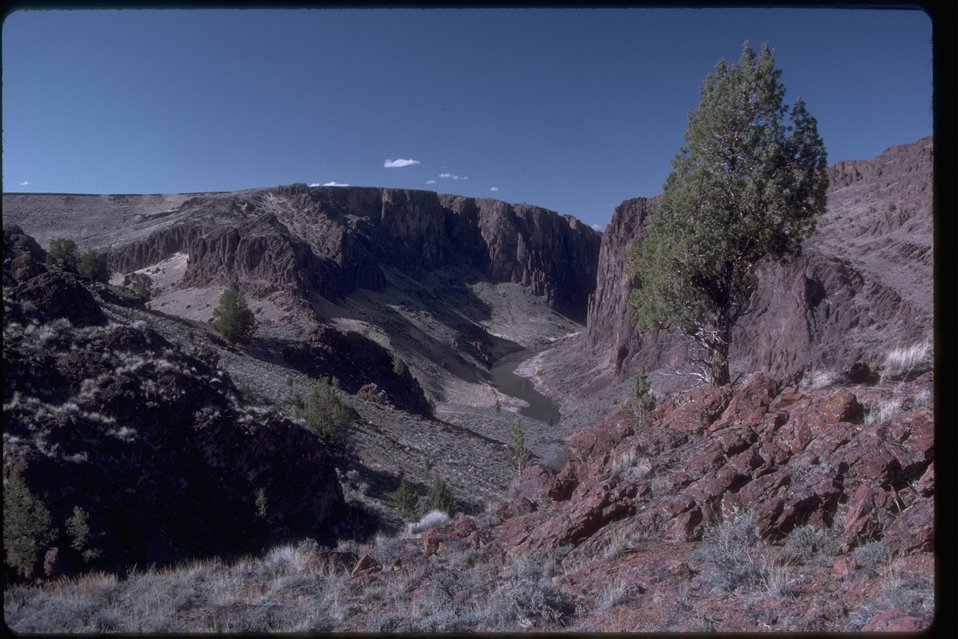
View of the rim rock of Owyhee Canyon with one tree in the foreground. OR 3-195